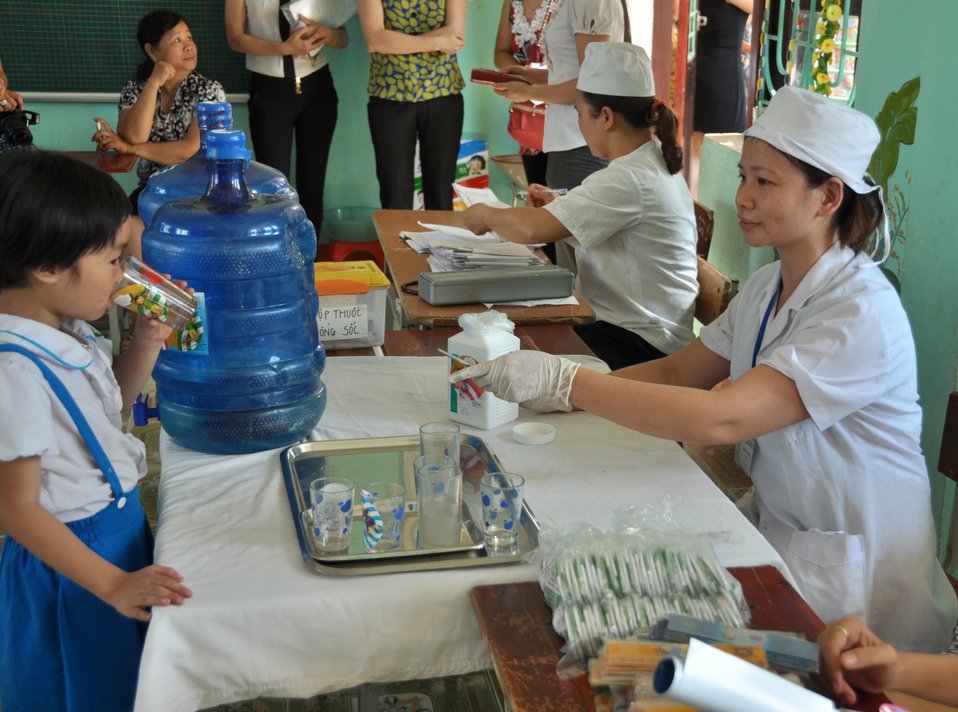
USAID supports deworming education and medication distribution in Bac Giang Province

May 20, 2013